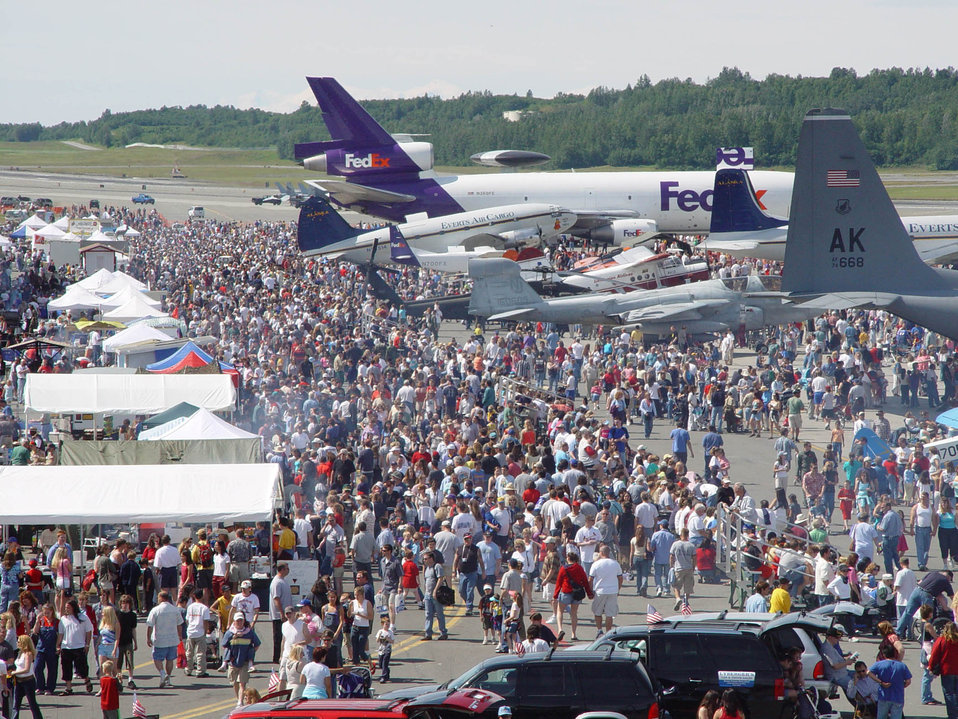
Arctic Thunder 2003

ELMENDORF AIR FORCE BASE, Alaska -- A crowd of about 150,000 people attended Arctic Thunder 2003, the base's annual open house and air show, June 28 and 29. The show's theme was